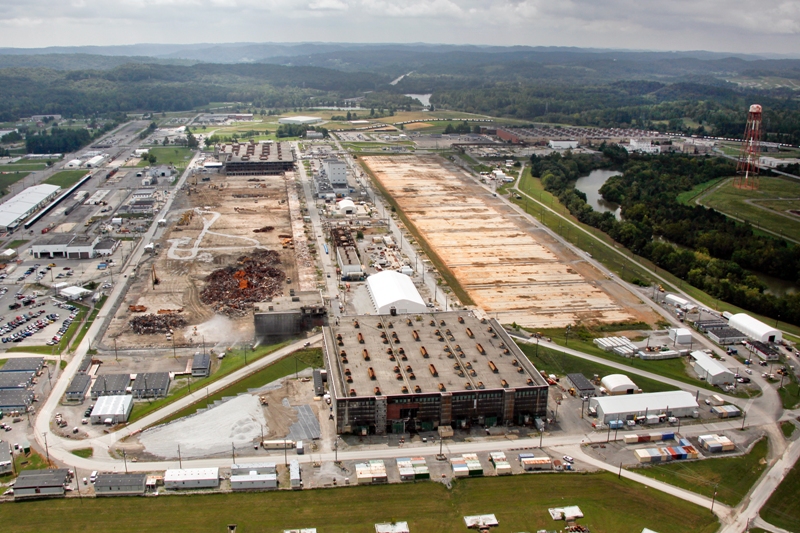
K-25

September, 2012

Sept. 2012, workers take down the non-technetium contaminated portion of K-25’s east wing. Demolition begins next month on the North Tower (bottom) as teams continue prepping the remainder of the east wing for demolition.